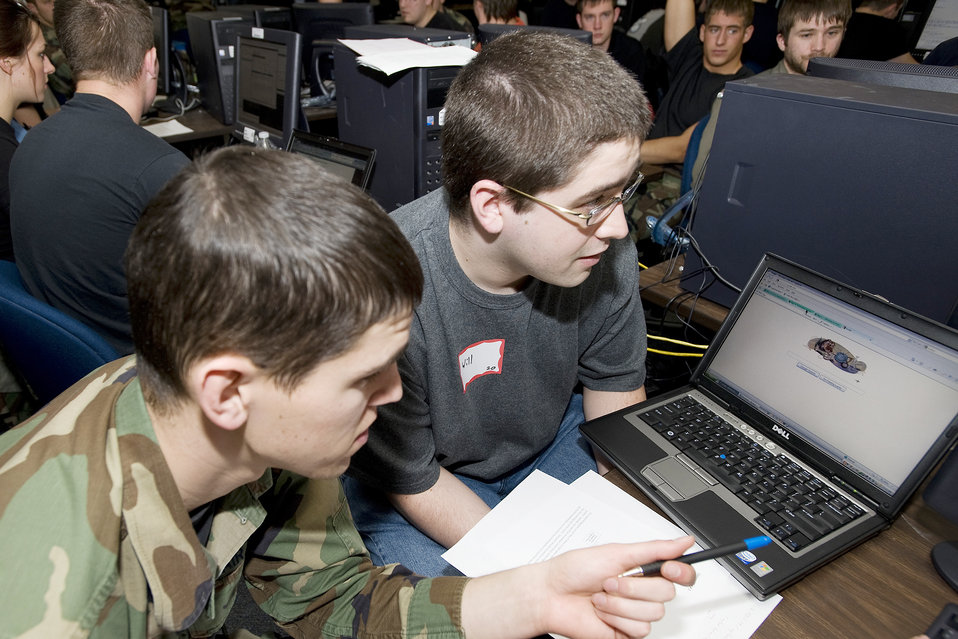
Competitors 'CANVAS' networks in hacking challenge

U.S. Air Force Academy Cadet 1st Class Bryan Hanes and Will Mitchell, a local student, participate in the Computer and Network Vulnerability Assessment Scenario April 2, 2010 at the Academy, Colo. Scenarios challenged students to hunt down and identify weaknesses in system design and implementation for a fictional social networking Web site.